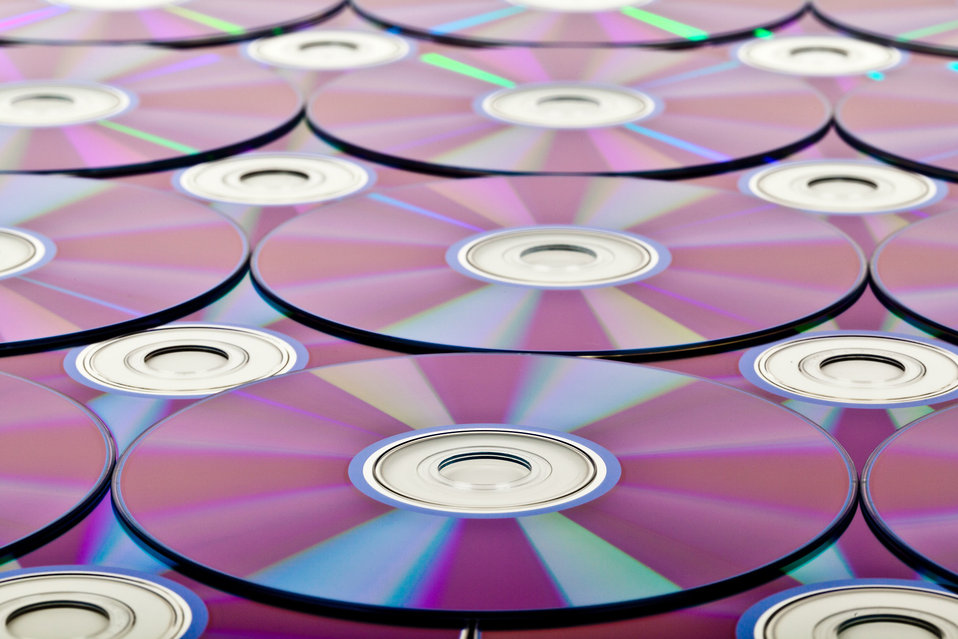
Blank dvds background image.